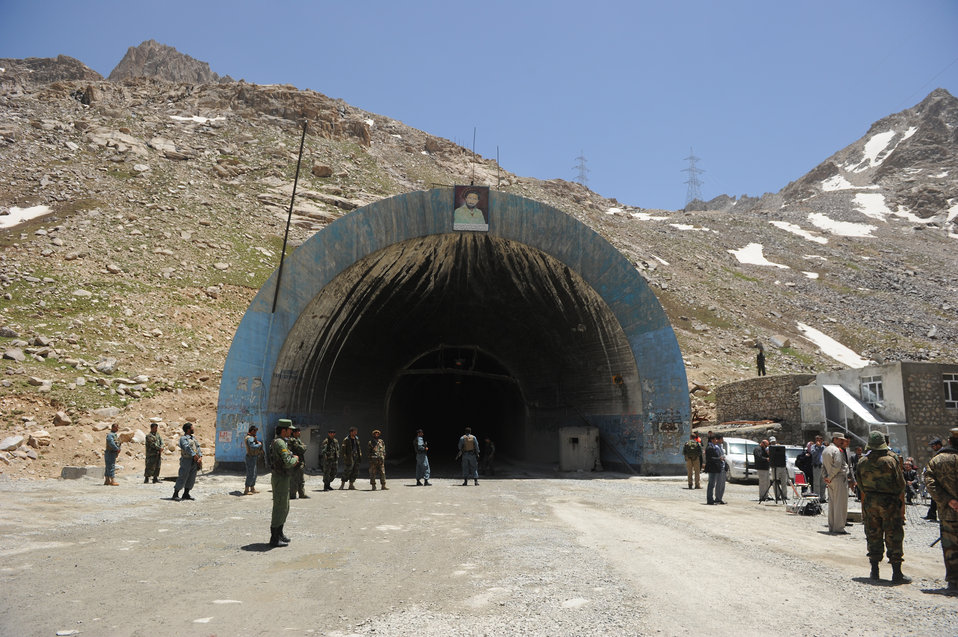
The North entrance to the Salang Tunnel on the border of Parwan and Baghlan Provinces, Afghanistan, on Wednesday, June 15, 2011. (S.K.Vemmer/Department of State)